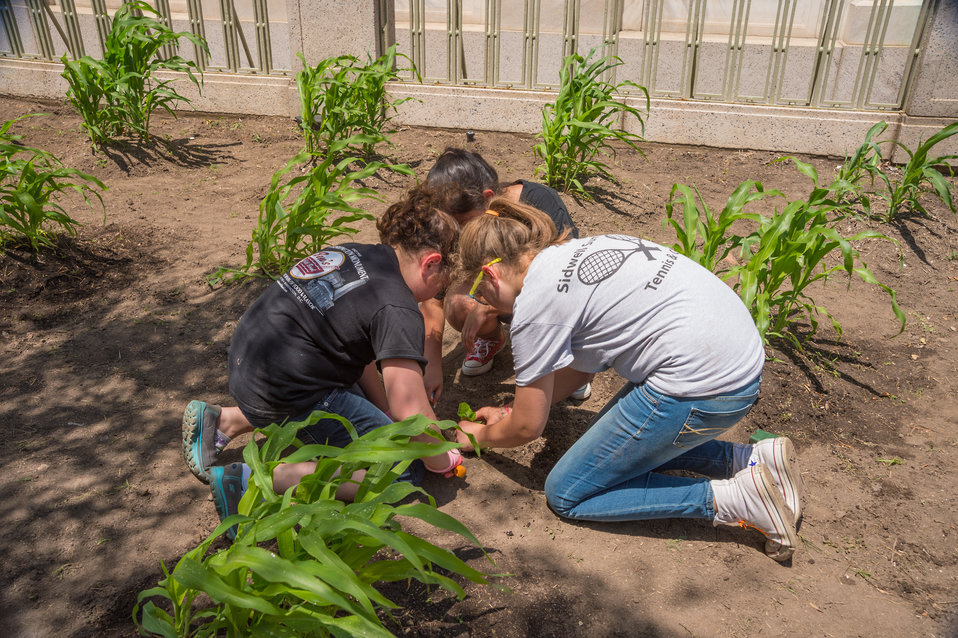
Mattie Melnyk, Jennifer Villeda and Daniella Kidder-Luciano plant squash in the Three Sisters Garden at the United States Department of Agriculture People’s (USDA’s) Garden, on Wed. Jun. 4, 2014 in Washington, DC. The garden is named the Three Sisters Garden for the three crops grown in the garden, corn, beans and squash. Corn the first sister is the tallest representing strength, beans the second sister climb and need the support of the first sister and provide nitrogen for the crops and squash the third sister protect others from sun and animals. The USDA’s Faith Based and Neighborhood Partnerships office sponsored the event.